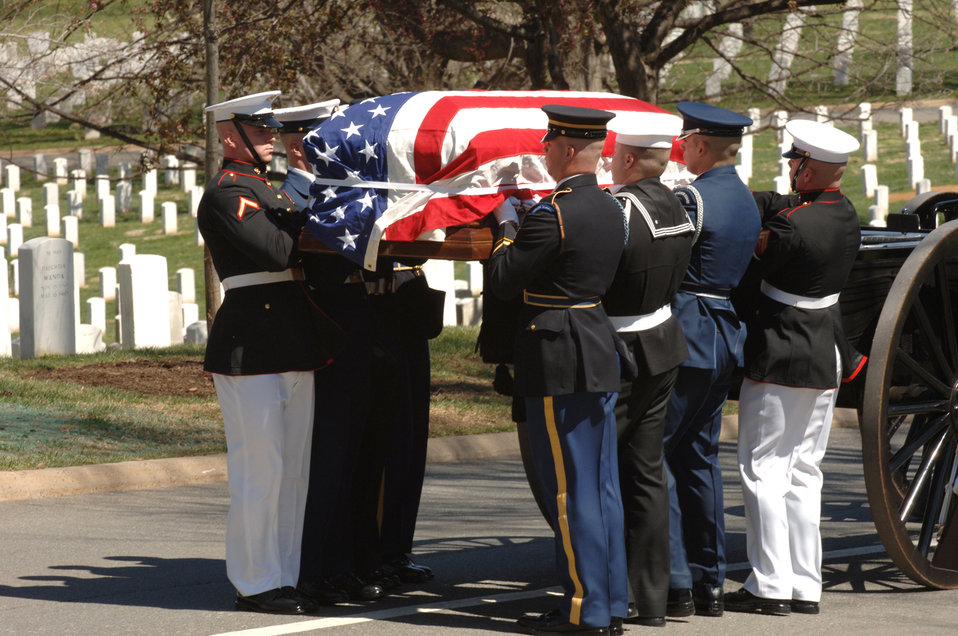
Weinberger tribute

A Joint Service ceremonial guard team removes from the caisson the casket containing former Secretary of Defense Caspar Weinberger at the gravesite in Arlington National Cemetery, Arlington, Va., April 4, 2006. Secetary Donald H. Rumsfeld delivered remarks during the memorial service.